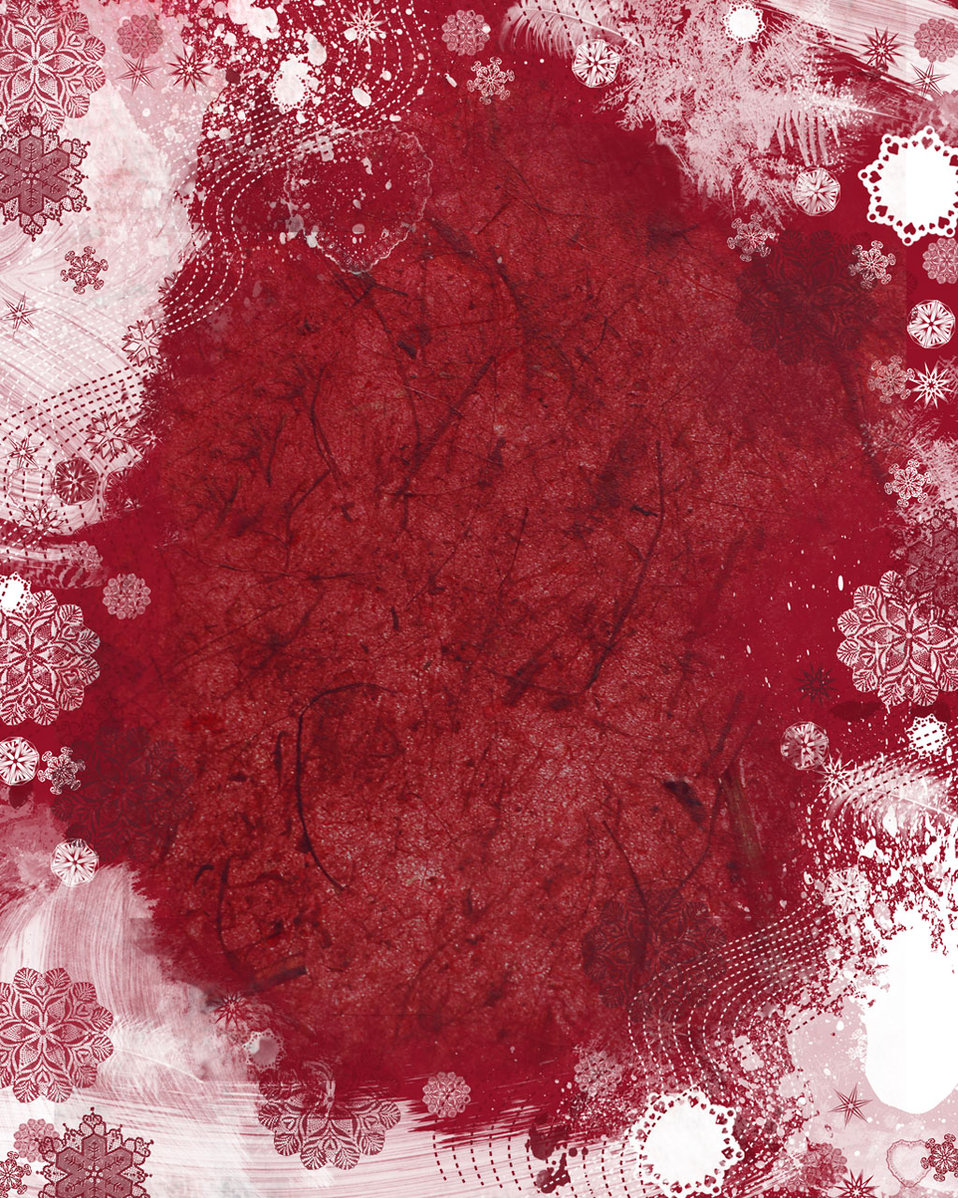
Christmas background ii

Dark red christmas background with snowflakes..